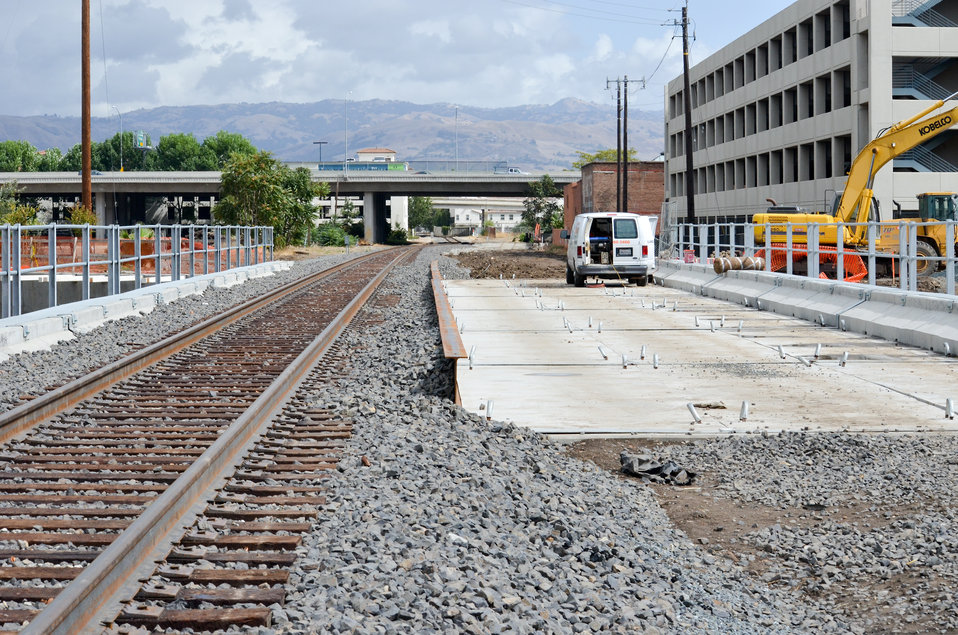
A new railroad bridge in San Jose, Calif., shown Oct. 5, 2011, is the last piece in the Sacramento District’s decades-long Guadalupe River Project to reduce flood risk for the city, scheduled for completion next year. The new bridge, scheduled for completion by November, replaces an older, lower bridge that blocked floodwater and often caused the Guadalupe River to spill its banks.